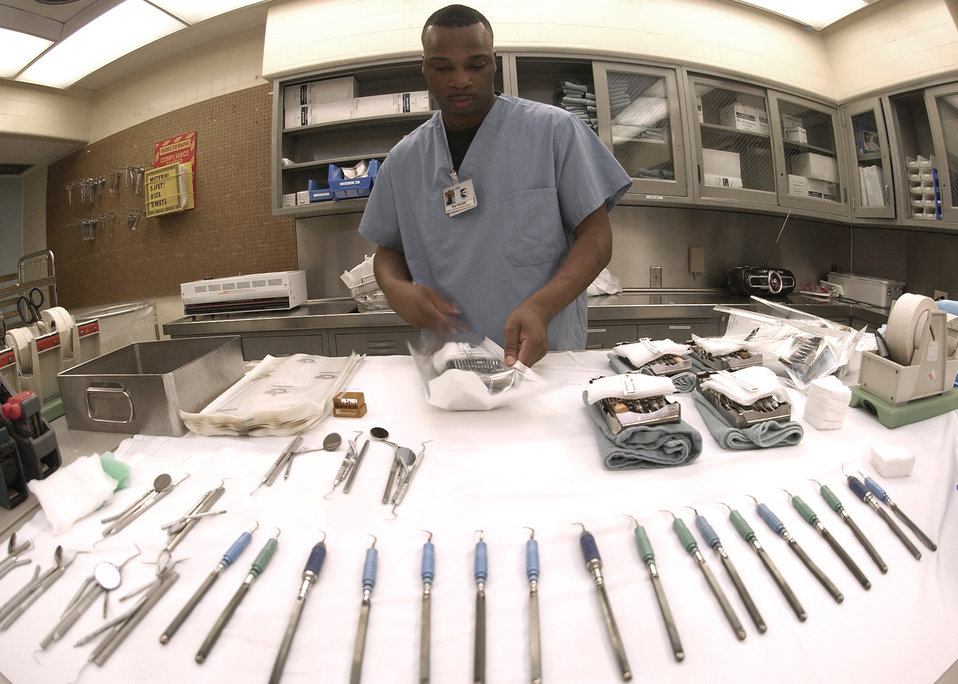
Armed to the teeth

Staff Sgt. Bobby Walker sorts dental instruments and prepares them for sterilization at Davis-Monthan Air Force Base, Ariz., on Aug. 10. The 355th Dental Squadron provides services for more than 7,000 active-duty Airmen at Davis-Monthan so that they may remain mission ready.